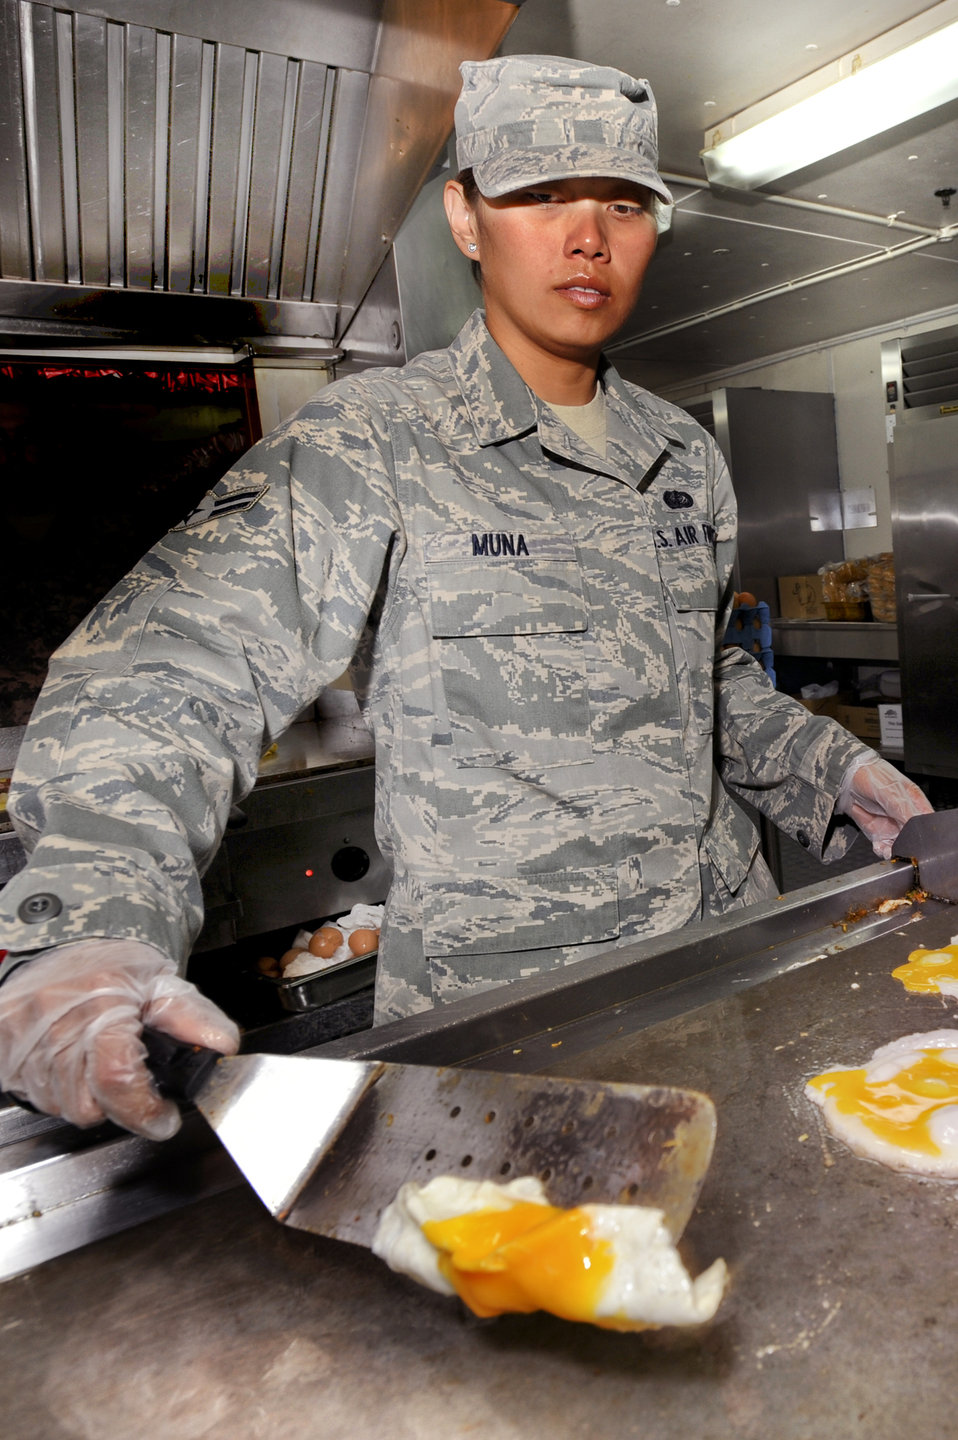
Feeding the force

Airman 1st Class Jolene Muna cooks eggs for a patron at the Coalition Compound Dining Facility March 23 at an air base in Southwest Asia. Airman Muna is a services journeyman with the 379th Expeditionary Force Support Squadron. He is from Ipan, Guam, and is deployed from Andersen Air Force Base, Guam.